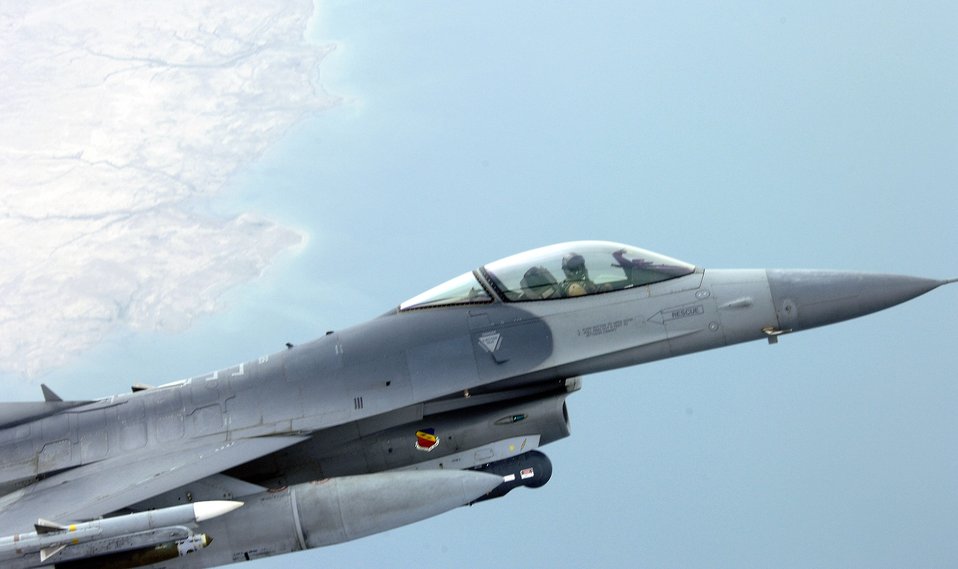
Close-air-support mission

An F-16 Fighting Falcon continues its close-air -support mission over Iraq after refueling with a KC-135 Stratotanker on Sunday, May 7, 2006. The KC-135 is from the 340th Expeditionary Air Refueling Squadron in Southwest Asia. The F-16 is deployed from Hill Air Force Base, Utah, to Balad Air Base, Iraq.